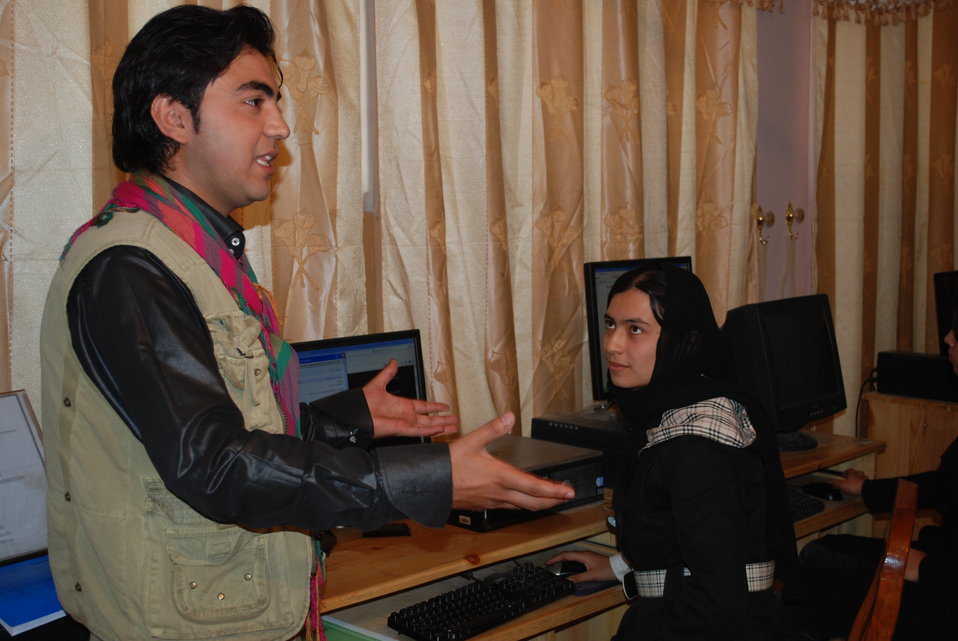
'On the Road' in Balkh Province